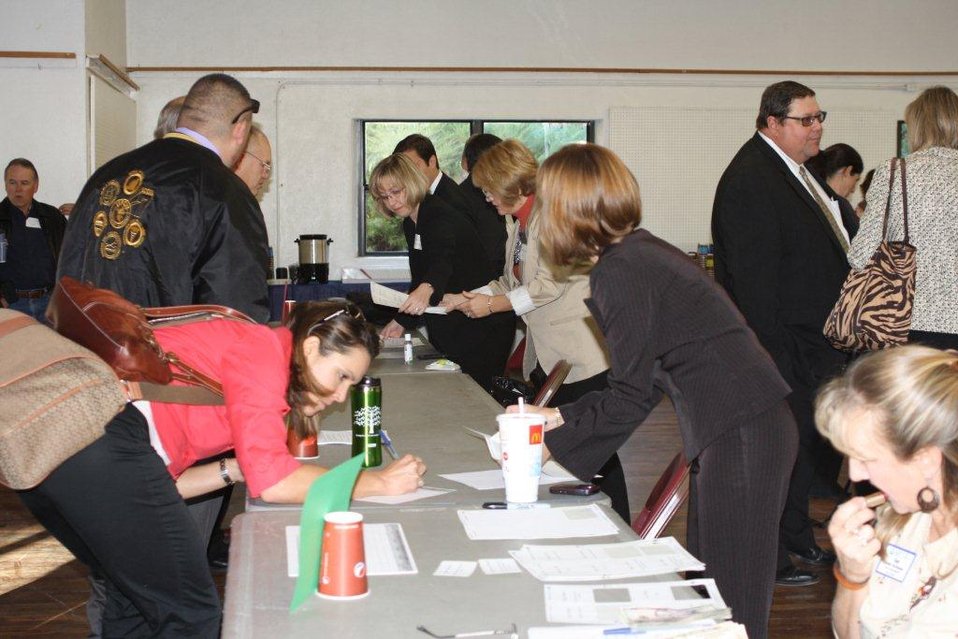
Participants registering for the conference in Pueblo, Colorado.